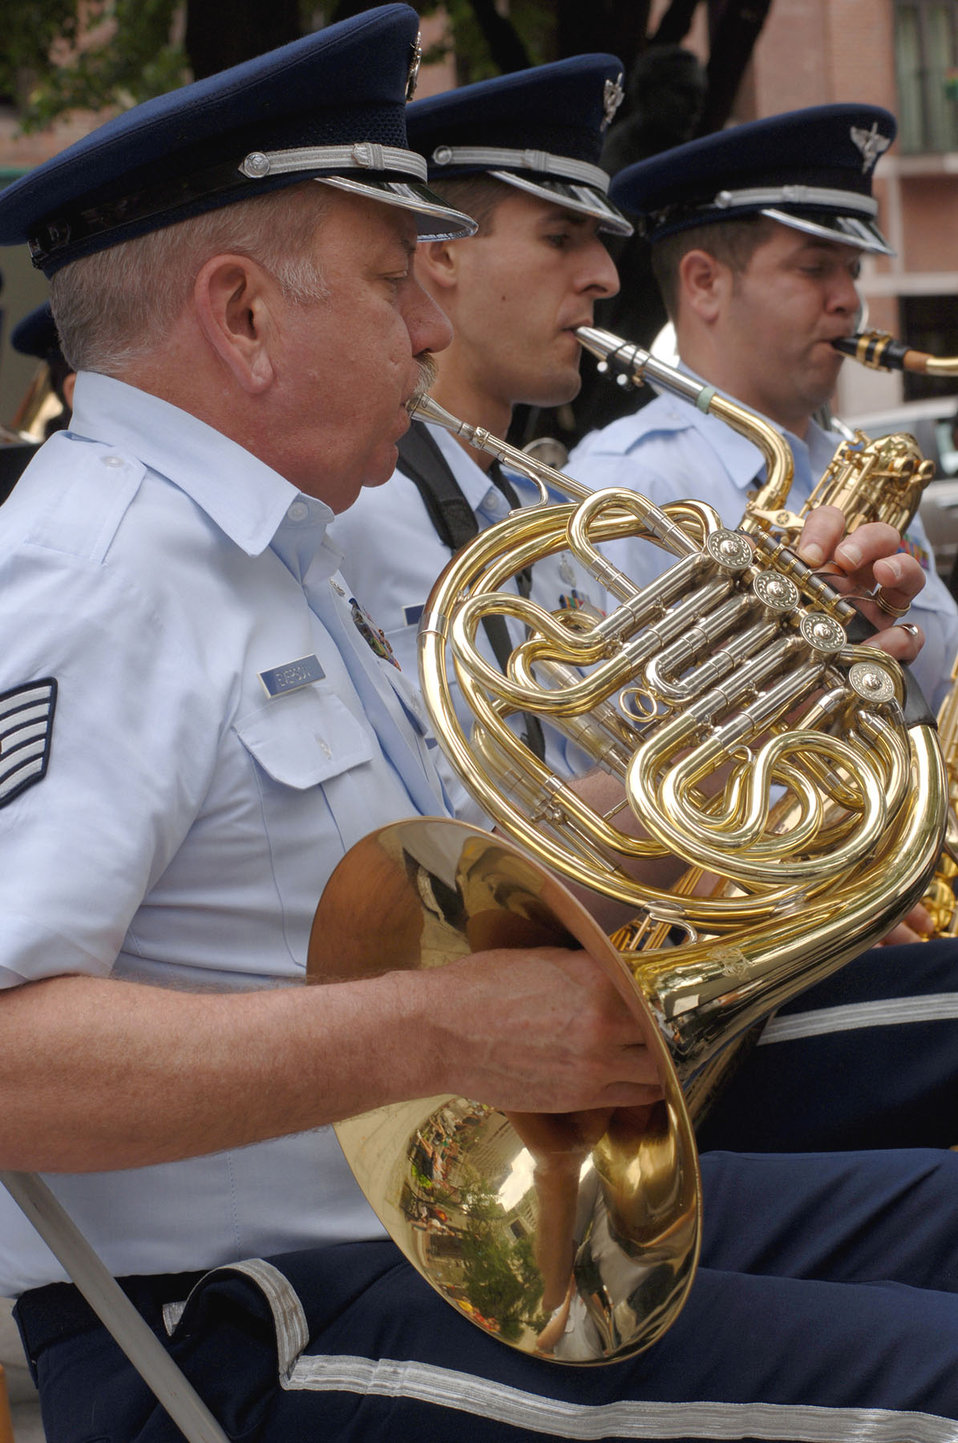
Boston proclamation party gets Air Force Week rolling

Tech. Sgt. Jim Emerson, a seven-year veteran of the Air National Guard Band of the Northeast, plays the French horn during a proclamation ceremony for Air Force Week New England in front of historic Faneuil Hall in downtown Boston Aug. 17. Sergeant Emerson is a National Guard member who lives in Florida, works in China and drills with the band out of Milford, Mass.